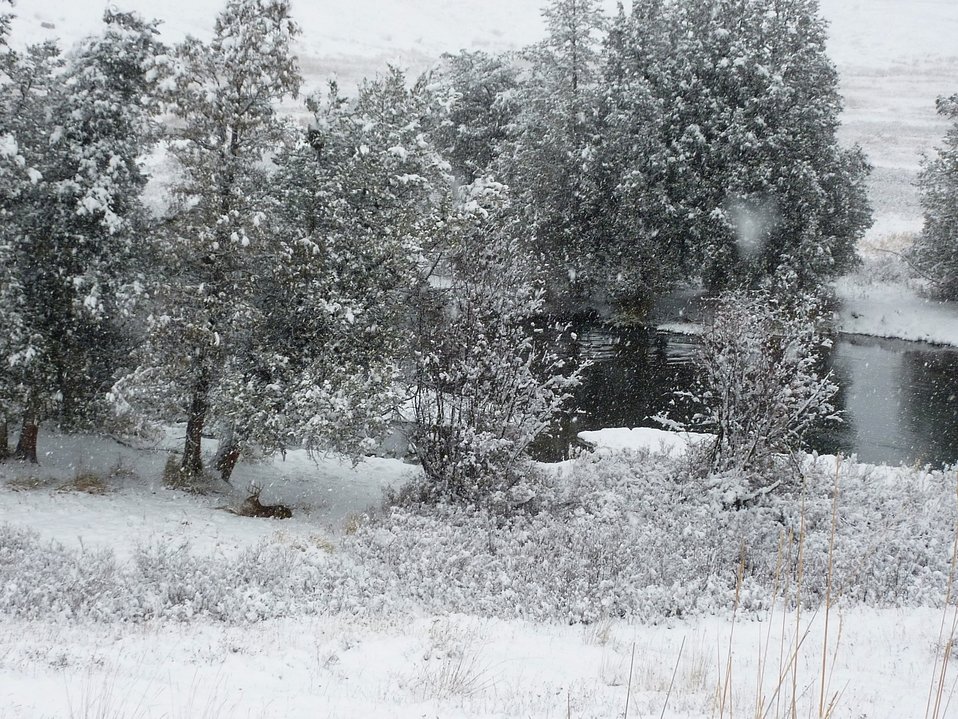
Snowy November day at National Bison Range

Large number of deer were gathering along Mission Creek during a November 2011 snowstorm. This one decided to take a rest under a snow-covered tree.

Credit: Mark Bellis / USFWS

Photo Contest Entry #67